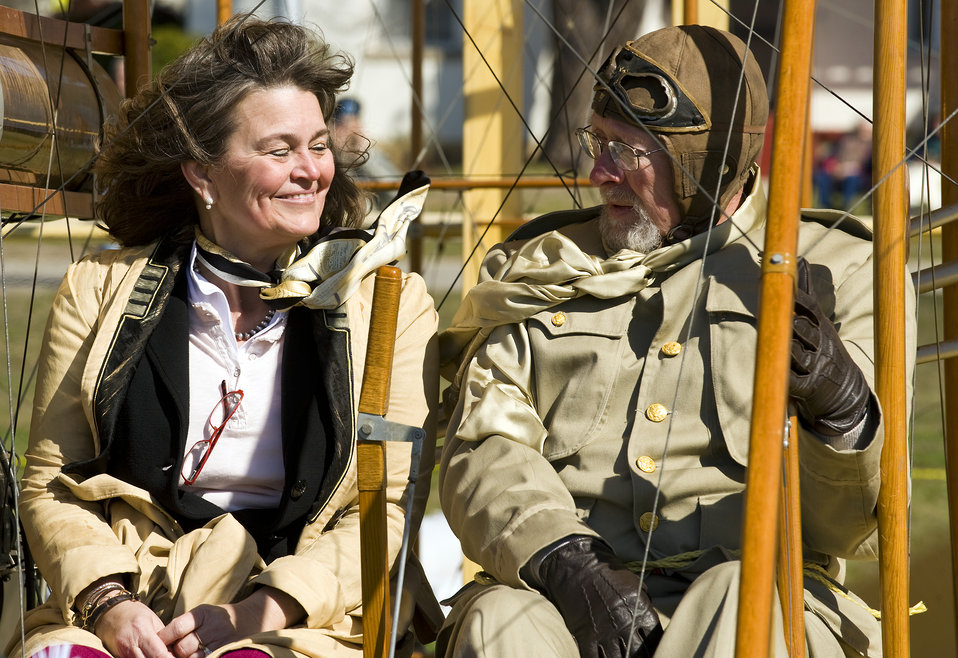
Military, civilians celebrate 100 years of military flight

Amanda Wright Lane, great grandniece of the Wright Brothers, takes a ride with Don Gum down the Fort Sam Houston Parade Ground in San Antonio March 2, 2010, during the Foulois Centennial Military Flight Celebration event. Mr. Gum is a Wright